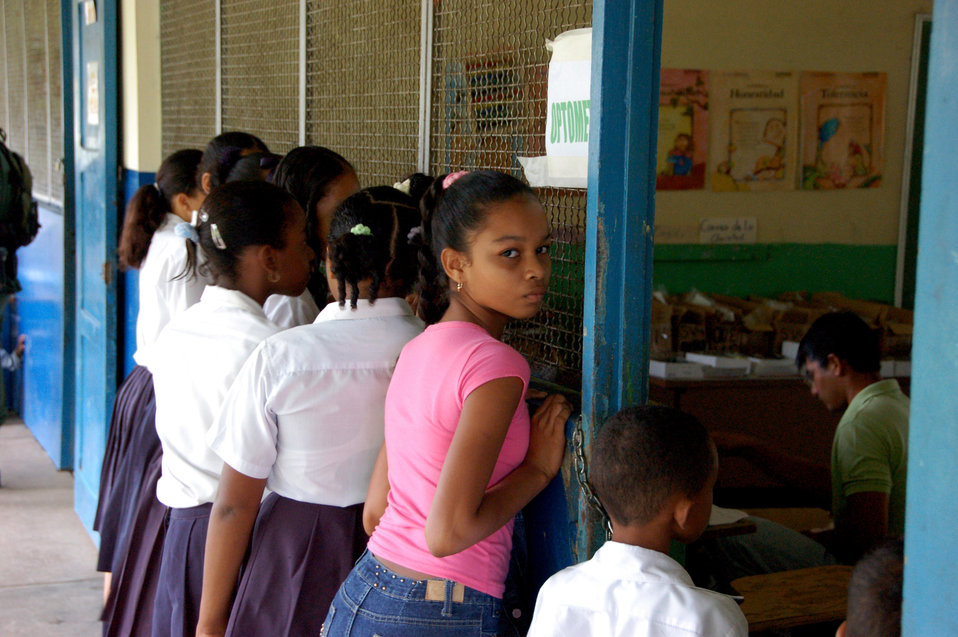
Air Force doctors take advantage of unique training

Panamanian school children peer through a window July 17 as U.S. Air Force members set up an optometrist office at a school in Santa Maria, Panama, as part of a Medical Readiness Training Exercise. The MEDRETE is a two-week long U.S. Southern Command sponsored-exercise designed to hone the skills of medical personnel while providing free health care in remote locations through partnership with host nation doctors. Approximately 2,350 patients have currently been seen by the medical staff.